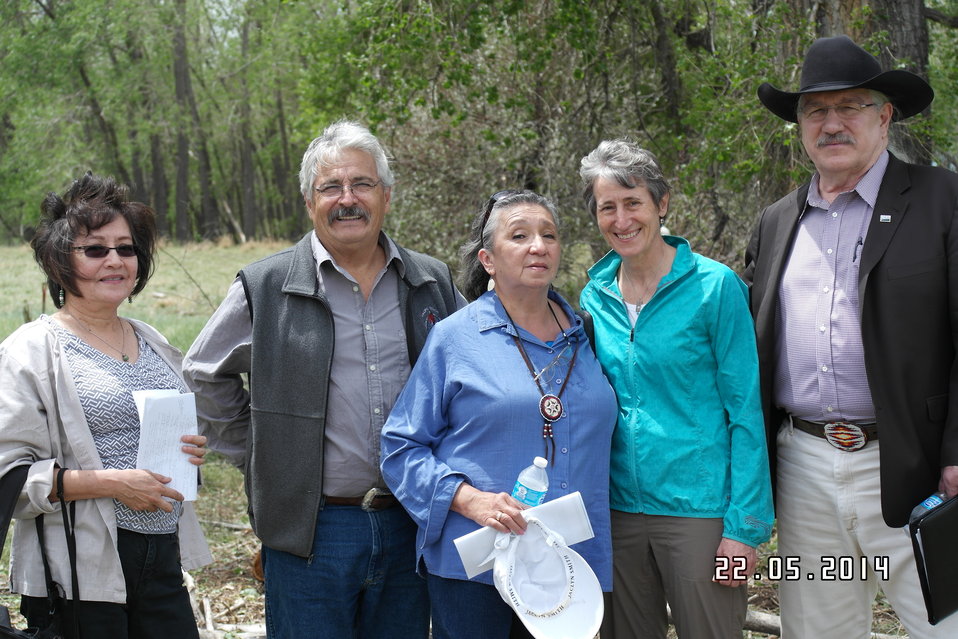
Native American Fish and Wildlife Society Meet with Interior Secretary Sally Jewell

Interior Secretary Sally Jewell helps local youth conservation groups plant cottonwood trees at Rocky Mountain Arsenal National Wildlife Refuge.